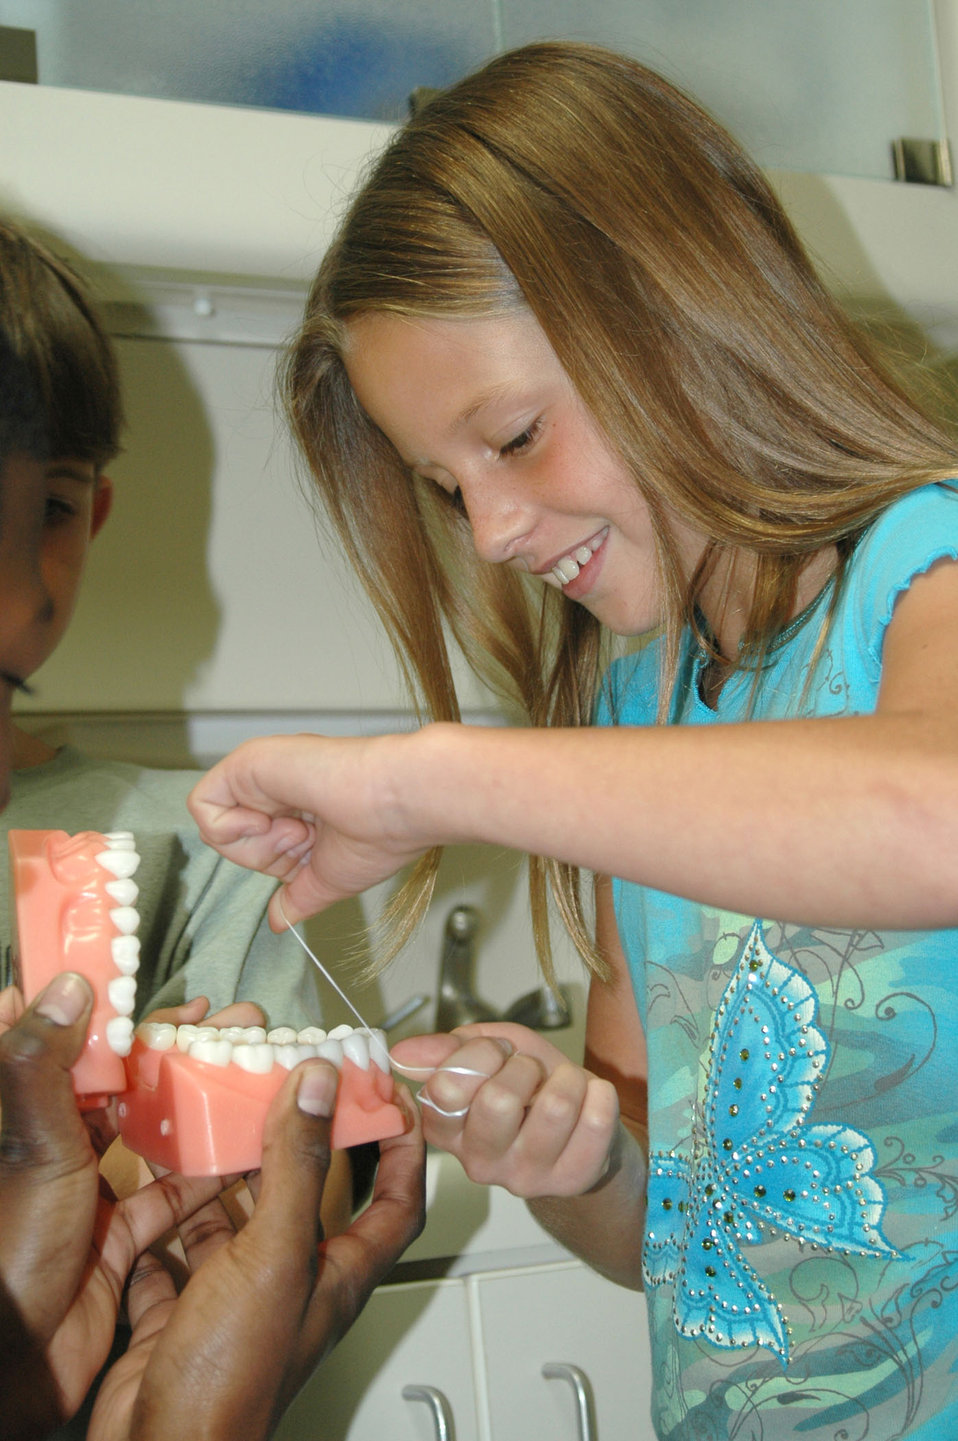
Dental health

Megan O'Day practices flossing after a demonstration from Airman 1st Class Eric Digby at Anderson Air Force Base, Guam. Megan is the daughter of Christine and 2nd Lt. Robert O'Day, 36th Maintenance Squadron. Airman Digby is a dental technician with the 36th Medical Group dental clinic.